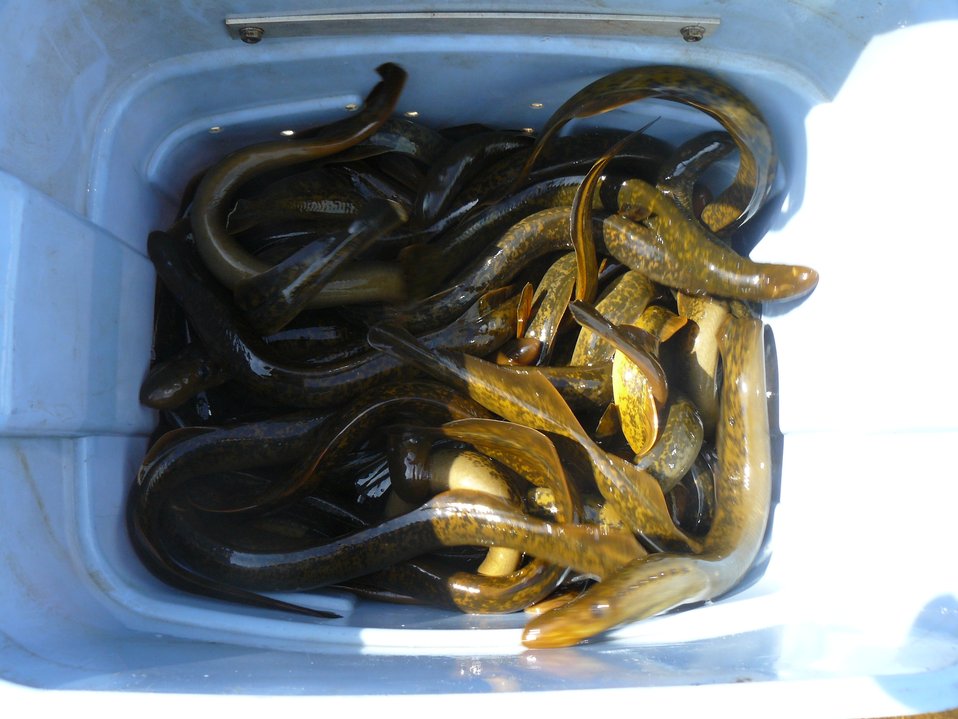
Adult Sea Lamprey Catch.